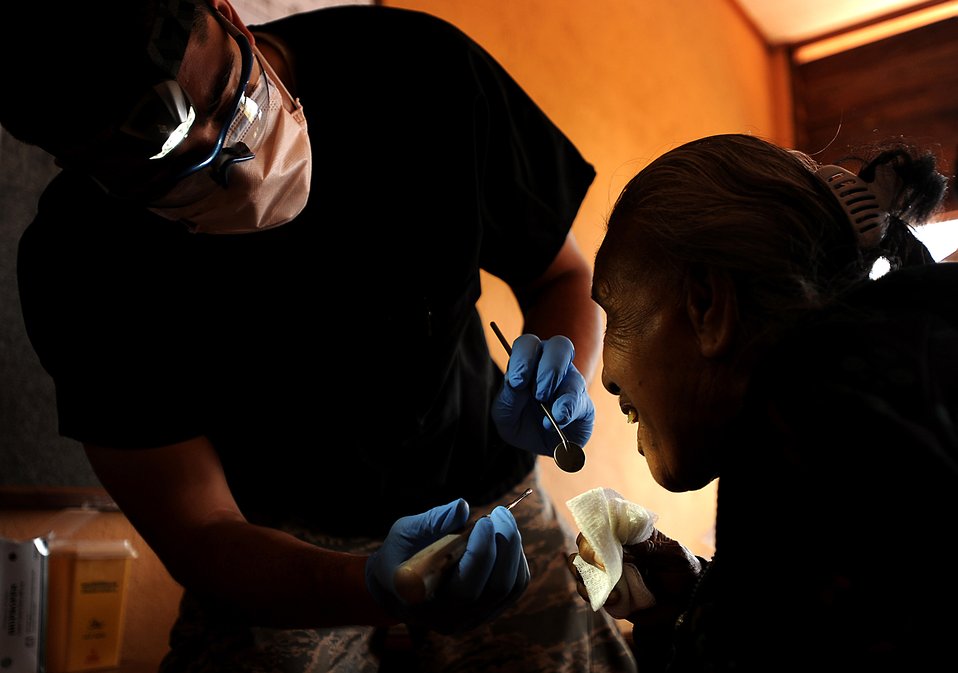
Providing care

Capt. Stephen Arnason removes rotted tooth fragments from a patient Sept. 19, 2011, during Exercise Pacific Angel 11-02 in Timor-Leste. Arnason is from the 673rd Dental Squadron at Joint Base Elmendorf Richardson, Alaska.